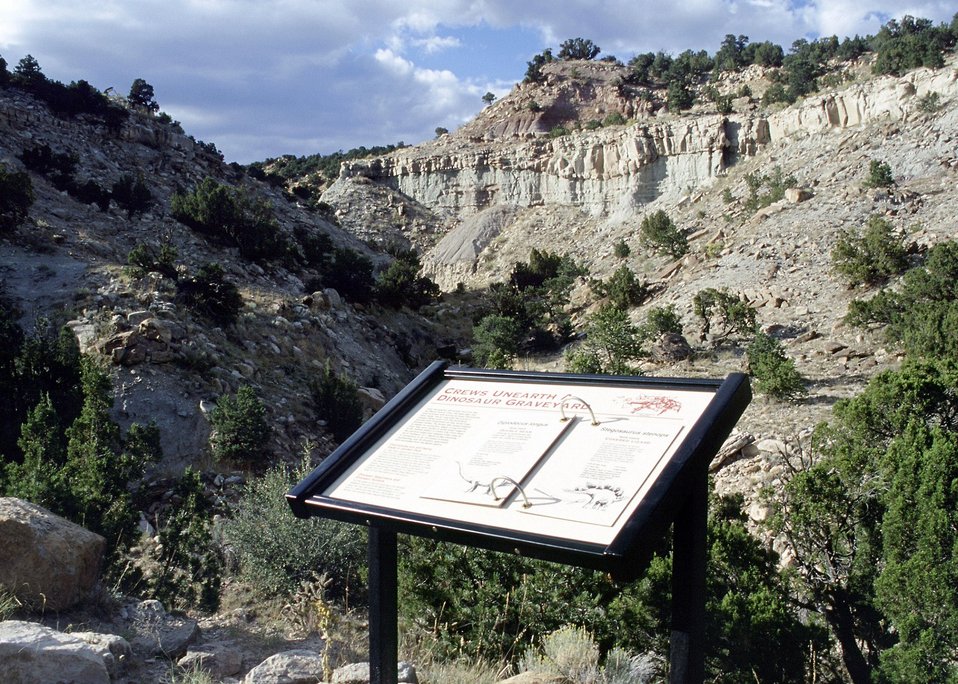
Clevelan Quary